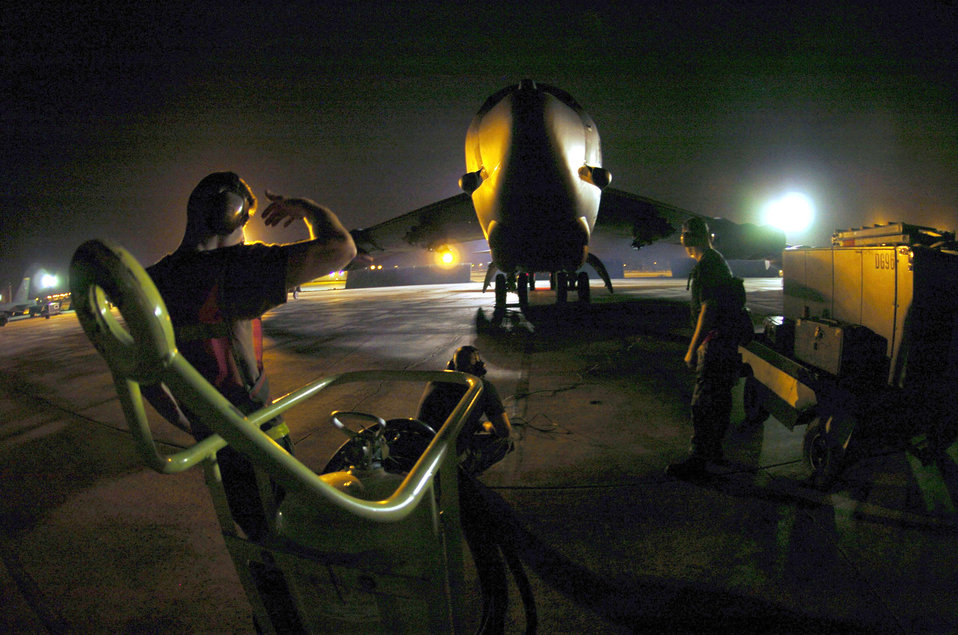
Bombers based in Pacific

ANDERSEN AIR FORCE BASE, Guam -- Senior Airmen William Fay (right) and Kory McLeod prepare to launch a B-52 Stratofortress bomber during night flying here. The Airmen are 5th Bomb Wing crew chiefs deployed from Minot Air Force Base, N.D. They are among the first rotation of Airmen sent to Guam since U.S. Pacific Command officials decided to station a bomber force here. Officials said the continuous bomber presence is aimed at enhancing regional security, demonstrating United States' commitment to the Western Pacific and providing training opportunities that integrate bombers into joint and coalition forces in the Pacific.